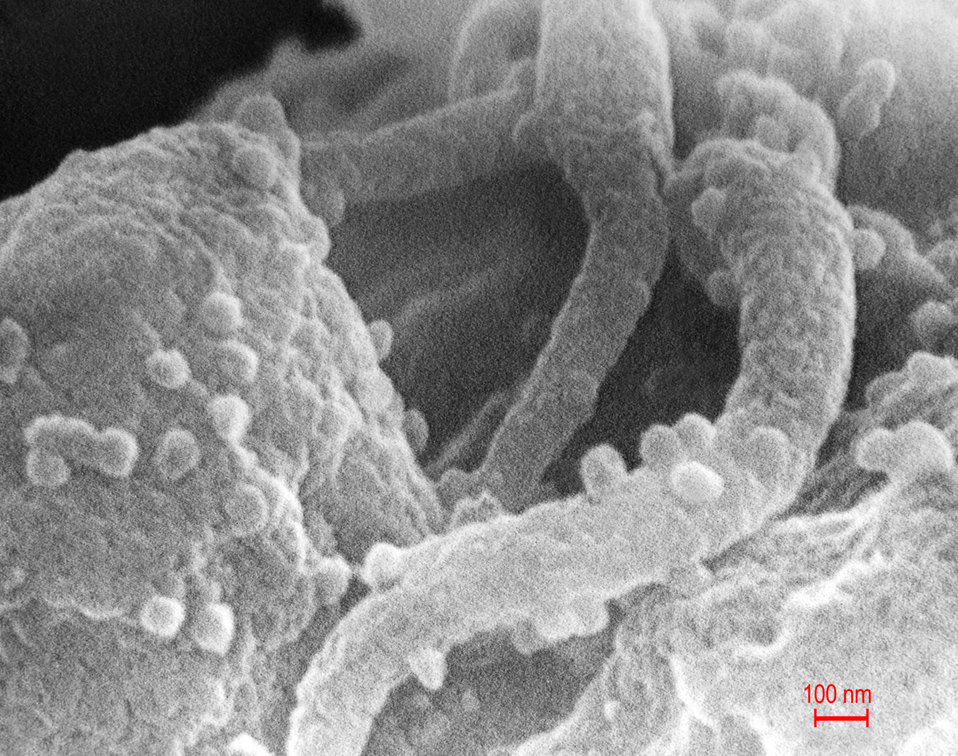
This scanning electron micrograph revealed the presence of the human immunodeficiency virus (HIV-1), (spherical in appearance), which had been co-cultivated with human lymphocytes. Note the lymphocyte in the lower left, and some of its extended pseudopodia. HIV-1 virions can be seen on the surface of this lymphocyte. See PHIL 1843 for another view of this electron microscopic scenario.